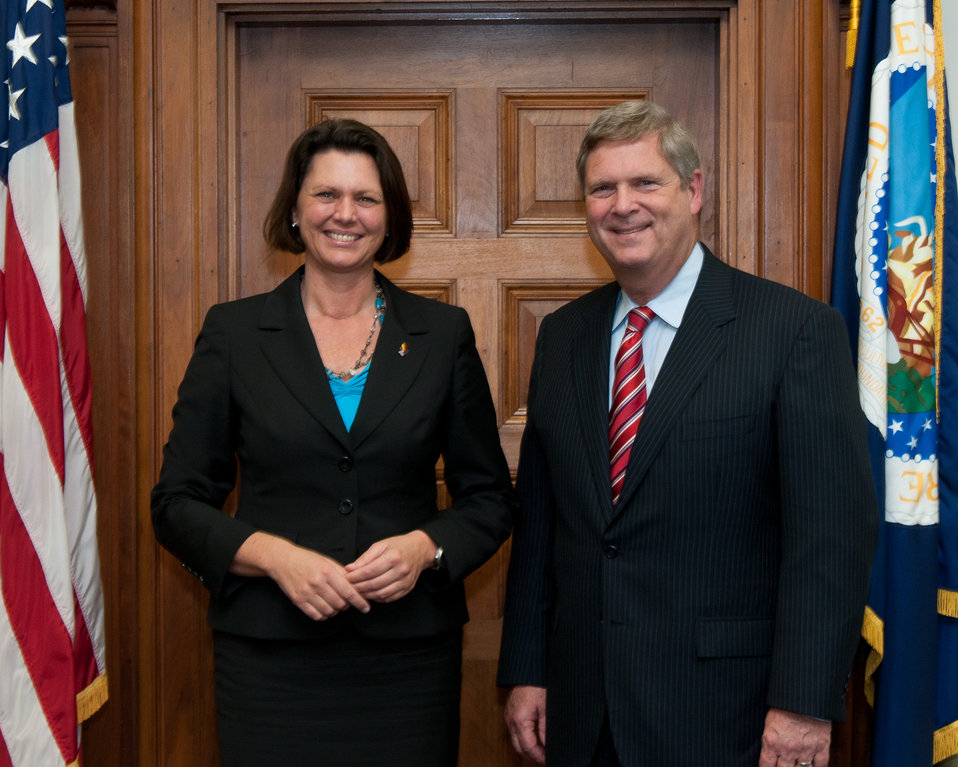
United States Department of Agriculture Secretary Tom Vilsack met with German Minister of Agriculture Ilse Aigner at the u.
s Department of Agruculture in Washington, DC, on Monday, September 19, 2011.